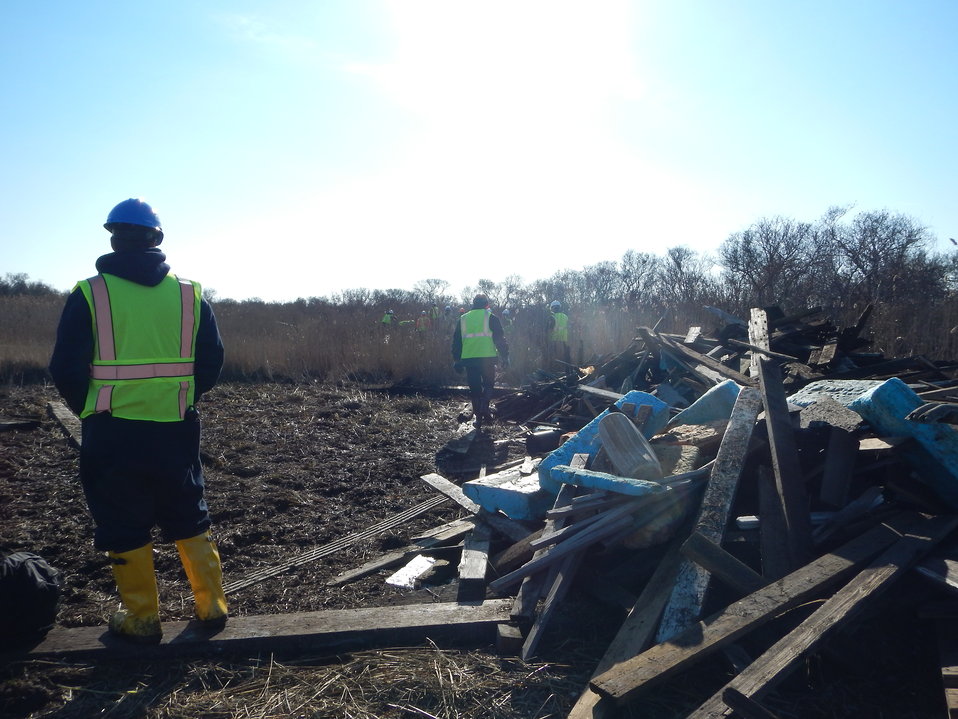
Lido Beach Cleanup-3

Cleanup crews begin a massive debris removal effort at Lido Beach Wildlife Management Area on Long Island.